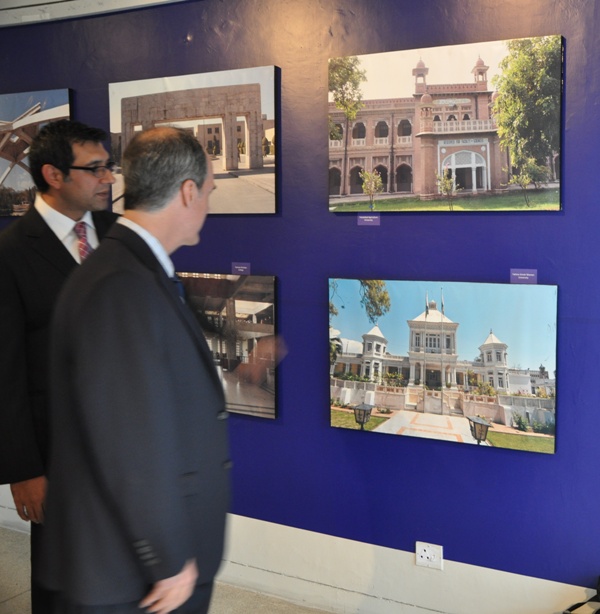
Provinicial Mission Director Punjab Ted Gehr looking at the photos of educational instituions supported by USAID in the past almost 6 decades